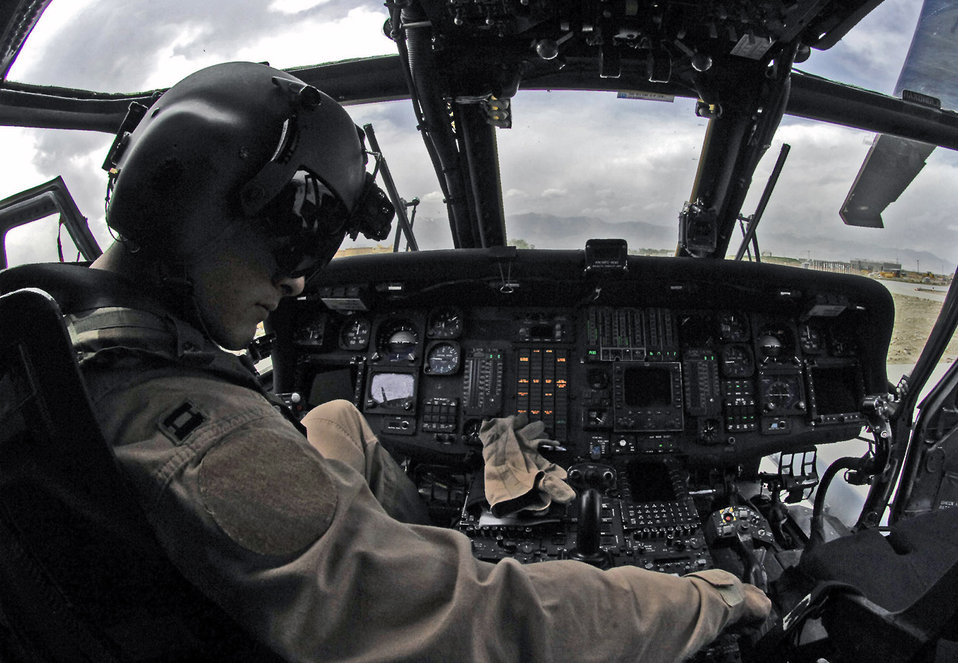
New York Guardsmen stay on alert to save lives

Capt. Tamar Hassan conducts preflight checks on an HH-60 Pave Hawk prior to a training mission April 20 at Bagram Airfield, Afghanistan. Captain Hassan is a 101st Expeditionary Rescue Squadron pilot.